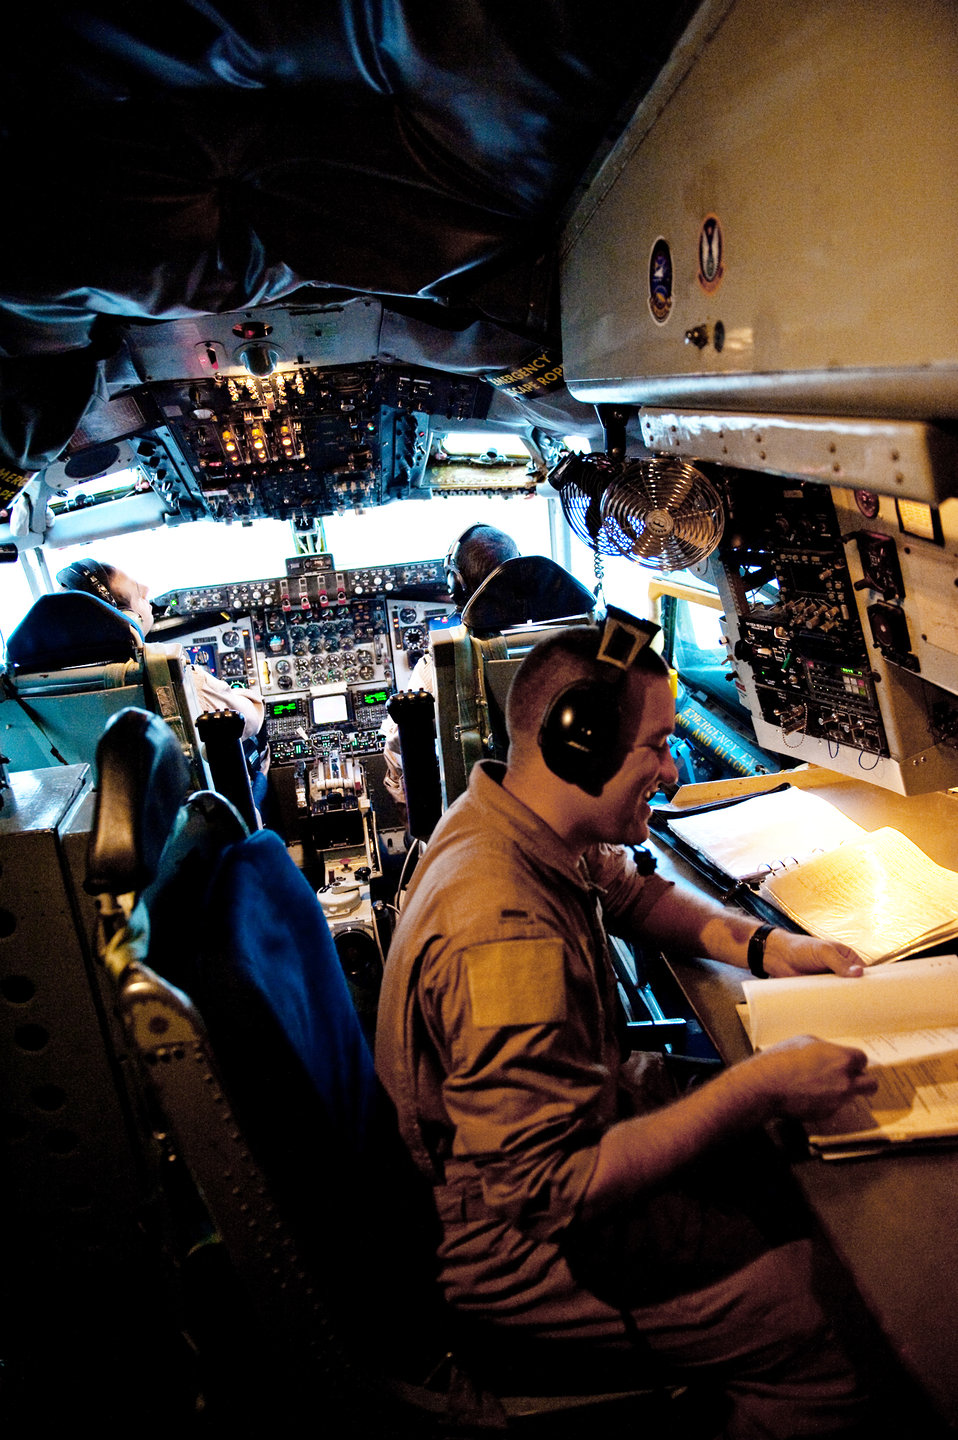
KC-135 crews prepare for mission

2nd Lt. Dick Conrad conducts a KC-135 Stratotanker preflight check, Dec. 2, 2009, in Southwest Asia. Lieutenant Conrad is a navigator assigned to the 340th Expeditionary Air Refueling Squadron. The squadron performs refueling missions in support of Operation Enduring Freedom.